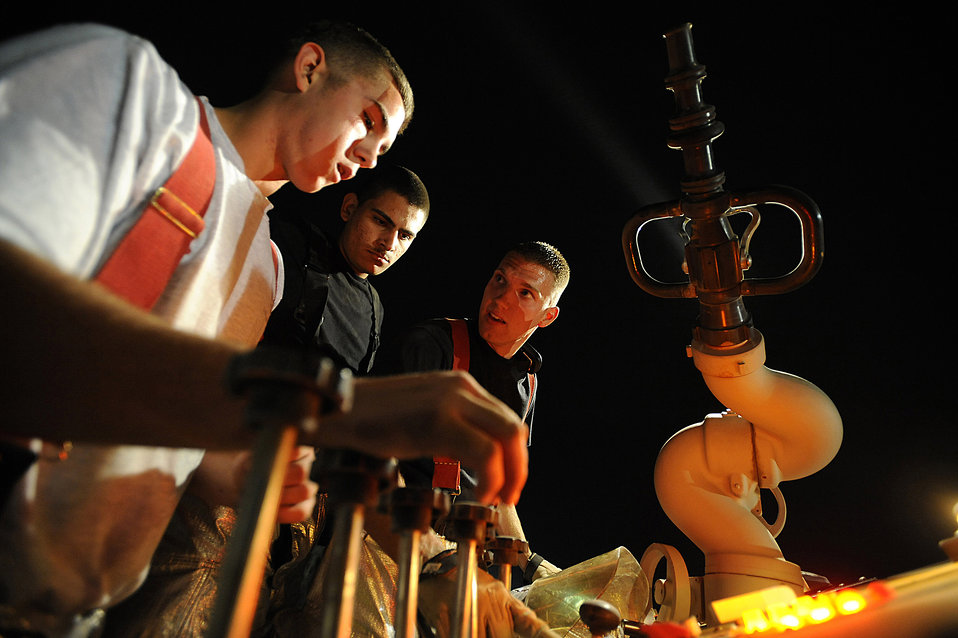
We didn't start the fire

Airman Daniel Mellstead, Airman Anthony Beavers and Senior Airman Roger Halle rehearse hose pattern procedures during a live-fire training scenario Oct. 22 at Joint Base Balad, Iraq. The Joint Base Balad Fire Department conducted a controlled burn as part of the scenario, giving individual firefighters experience at fighting interior fires. All three Airmen are assigned to the 332nd Expeditionary Civil Engineer Squadron. Airman Beavers is deployed from McChord Air Force Base, Wash. Airmen Mellstead and Halle are deployed from Peterson AFB, Colo.